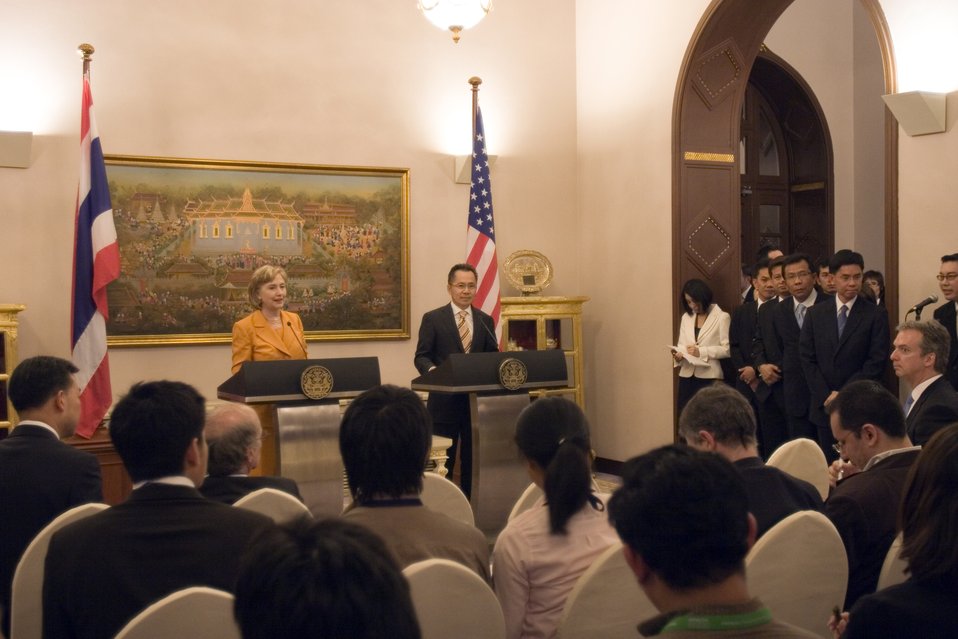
U.S.-Thailand Bilateral Meeting

U.S. Secretary of State Hillary Rodham Clinton and Deputy Prime Minister Korbsak Sabhavasu answer questions from the press following the bilateral meeting at Government House in Bangkok, Thailand July 21, 2009.